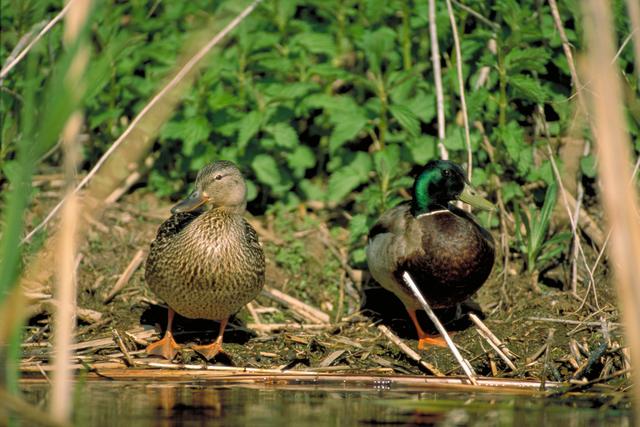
Mallard Pair